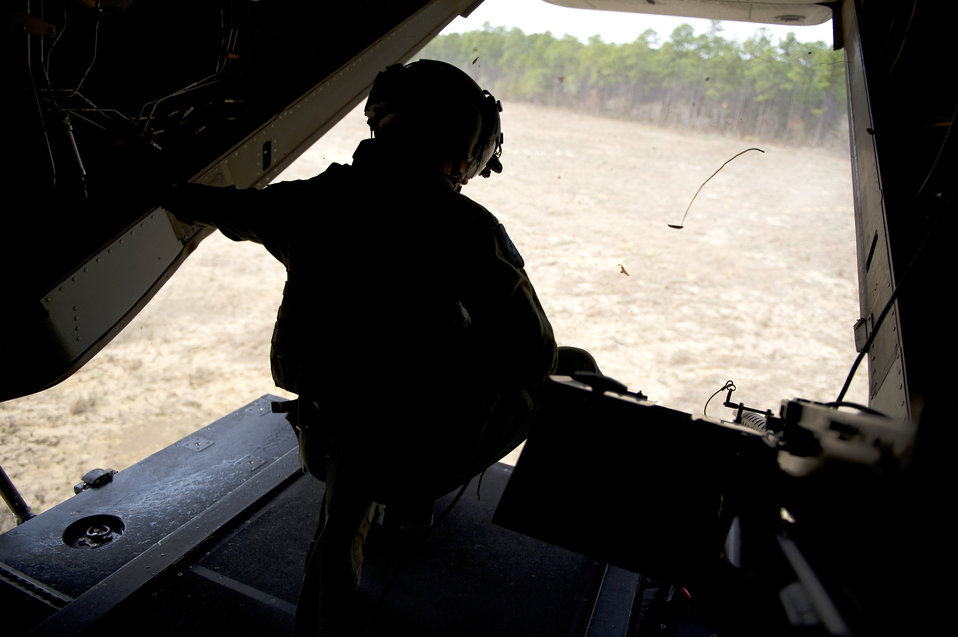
Osprey training mission

Master Sgt. John Rhoten watches out the back of a CV-22 Osprey during a training mission Feb. 1, 2011, at Hurlburt Field, Fla. Sergeant Rhoten is a flight engineer assigned to the 8th Special Operations Squadron.